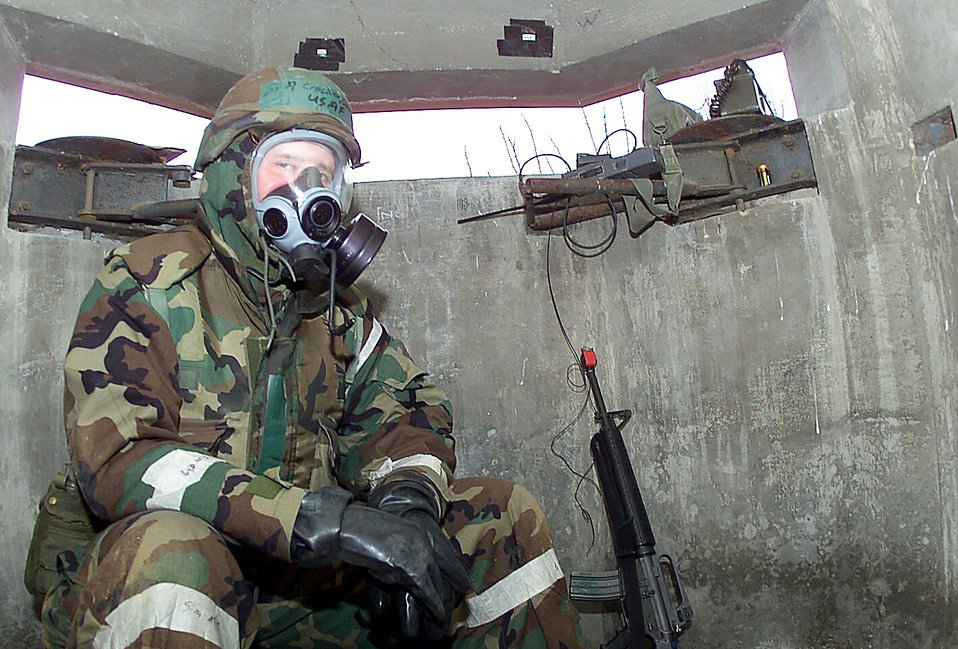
Bunker man

OSAN AIR BASE, South Korea -- Senior Airman Daniel Crocker sits in a bunker during exercise Beverly Bulldog 01-04 here March 24. Airman Crocker is a security forces augmentee with the 51st Maintenance Squadron.